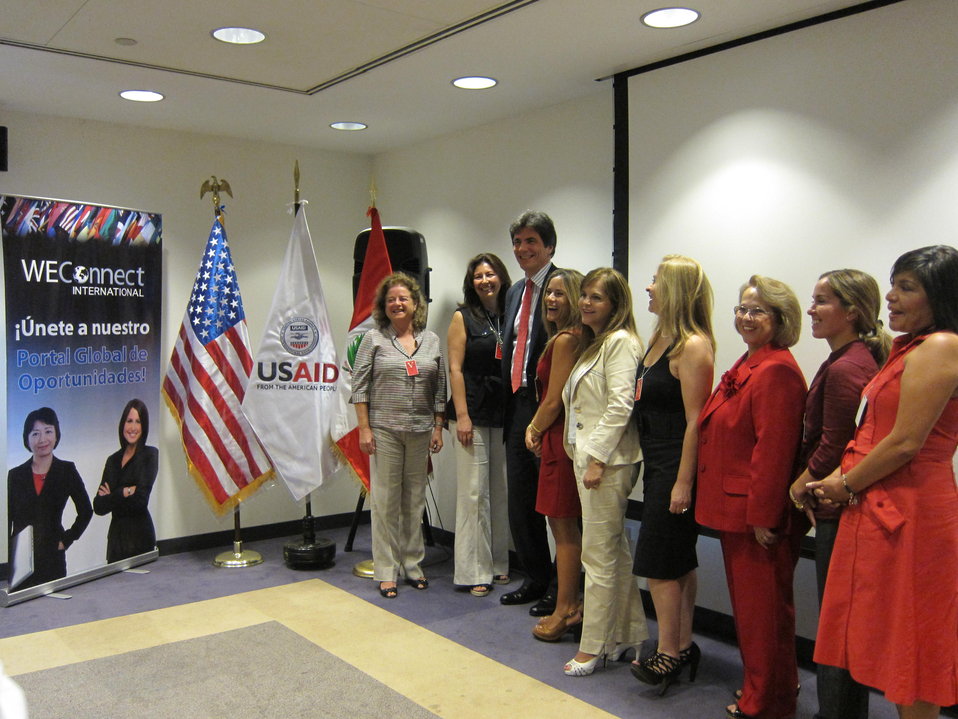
Assistant Secretary Fernandez Meets With Women Entrepreneurs

Assistant Secretary of State for Economic and Business Affairs Jose Fernandez meets with WEConnect International women entrepreneurs, who are part of the Pathways Access Initiative, in Lima, Peru, on February 17, 2012.